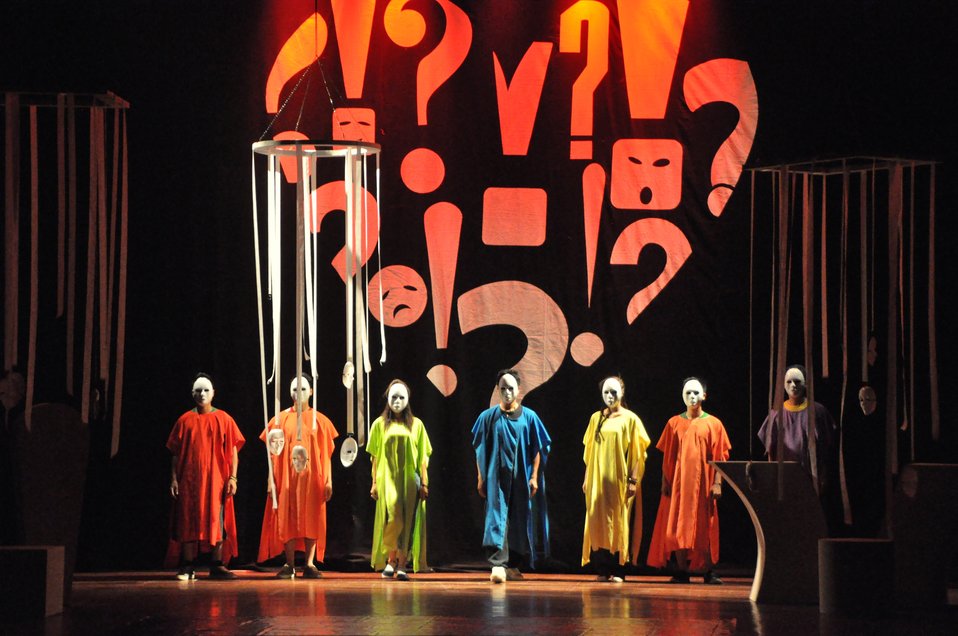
PEPFAR Musical Questions and Exclamations

Hanoi, May 17, 2013